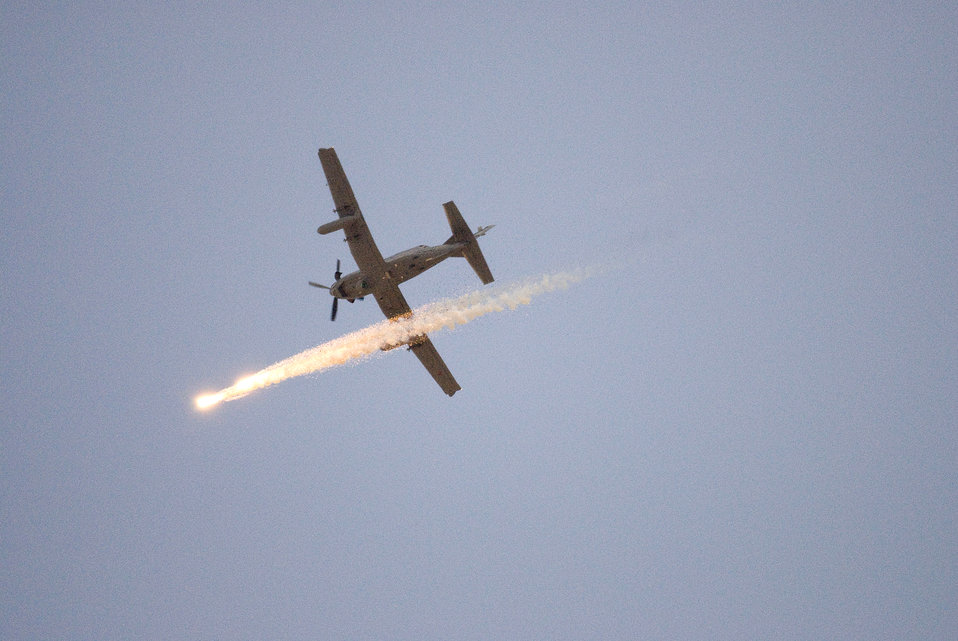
Light-attack aircraft

A Hawker Beechcraft AT-6C, modified for various light attack missions, releases flares during an operational test Oct. 5, 2010, over the Southern Arizona desert. It was the first time flare buckets, or aircraft survivability equipment, were mounted onto the airplane and fully integrated with the control system on board. A team of pilots and engineers certified that the airplane could separate the flares correctly while learning if the modification would have adverse effects on the airplane's handling.